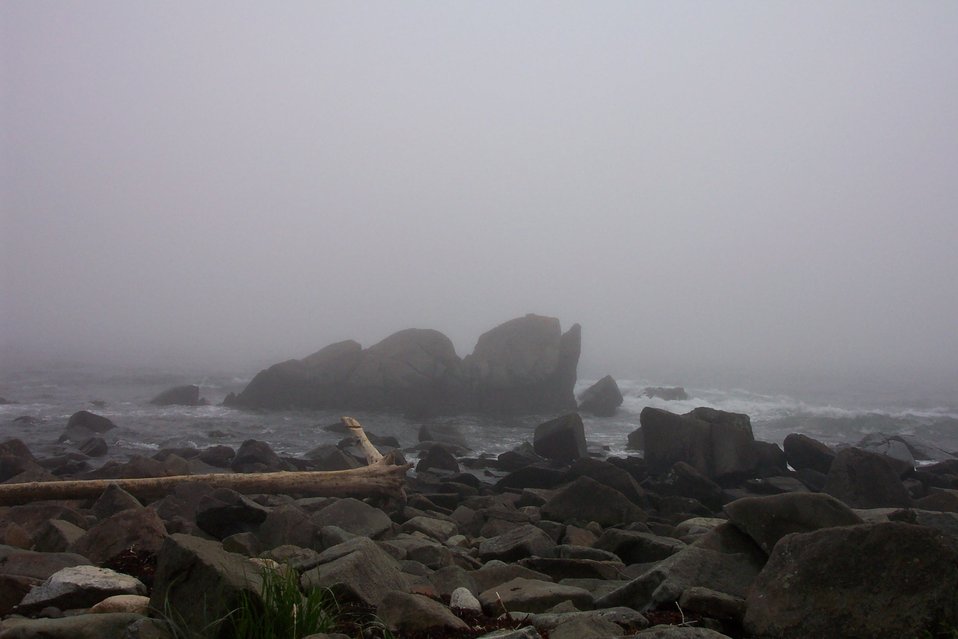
Part of a foggy rocky shoreline at West Quoddy Head.